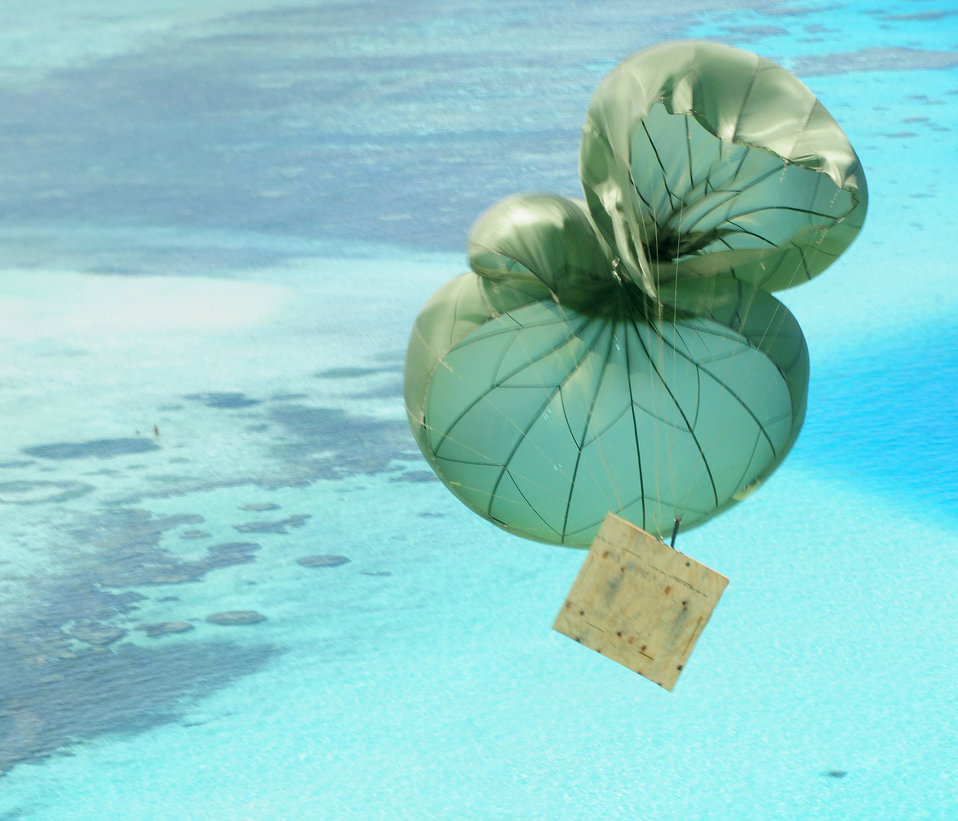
Operation Christmas Drop

A box of humanitarian goods floats to the drop zone during Operation Christmas Drop Dec. 14, 2010, over the Yap Islands, Commonwealth of the Northern Marianas Islands. Operation Christmas Drop began in 1952 and is the Air Force’s longest-running humanitarian operation.